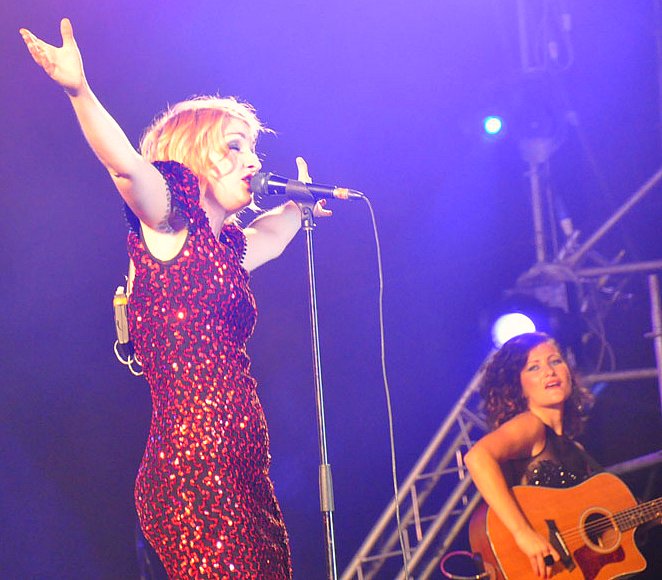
MTV EXIT Hanoi concert March 27, 2010

Australian singer Kate Miller-Heidke performs in Hanoi.